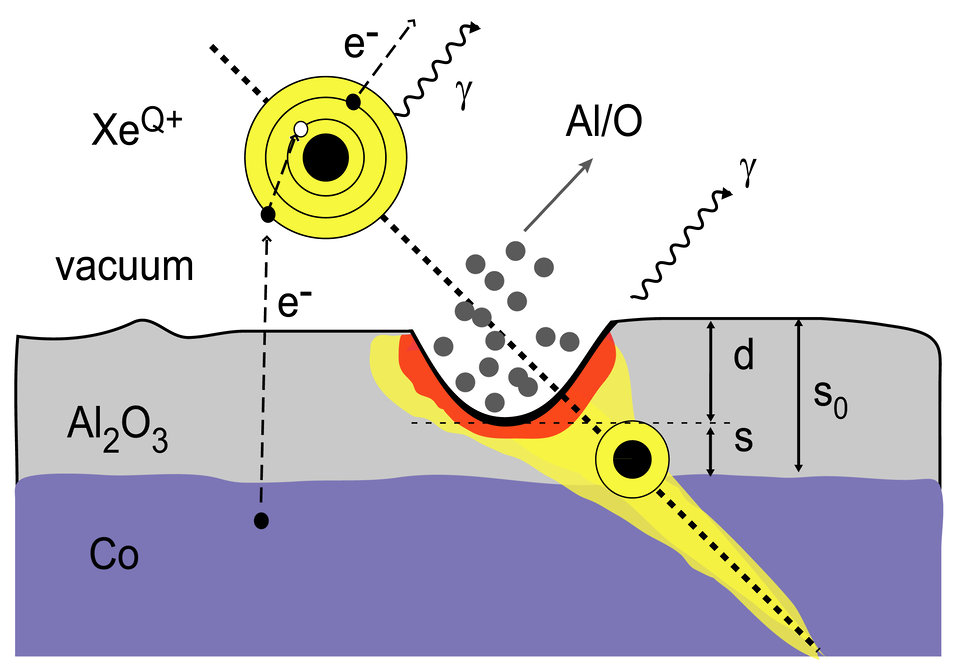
Ions

A schematic detailing the various ways that the energy of highly charged ions is dissipated during an impact. Approximately 60 percent of the ion's energy is blown back and, according to NIST measurements, 27 percent of the remaining 40 percent goes into deforming the material-making a crater or 'divot'.